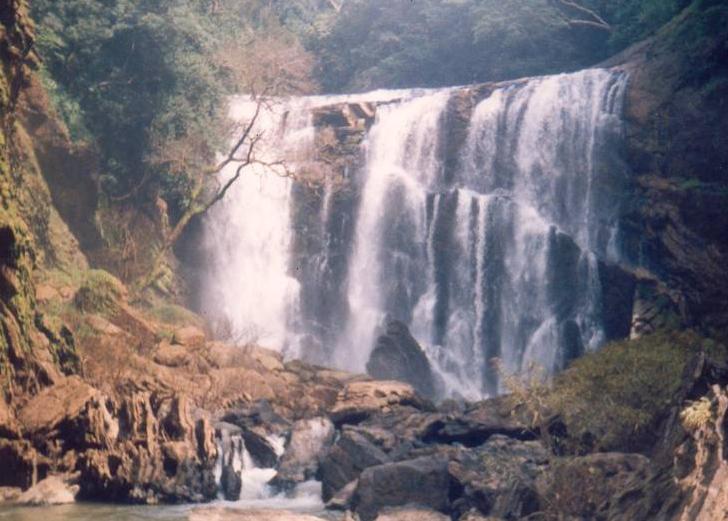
Saatoddi Falls Manjunath Doddamani, Gajendragad / Hubli, Karnataka(North), India